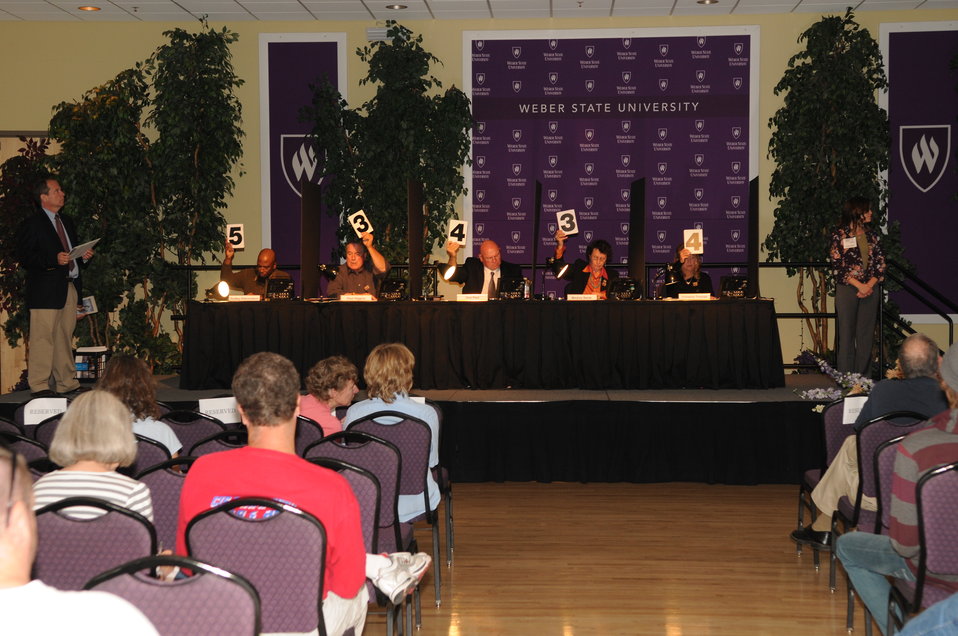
Judging

The U.S. Fish & Wildlife Service sponsored the 2012 Federal Duck Stamp Art Contest September 28 and 29 in Ogden, Utah, at Weber State University. A panel of five judges was responsible for choosing the art work used to design the 2013-2014 Migratory Bird Hunting and Conservation Stamp.